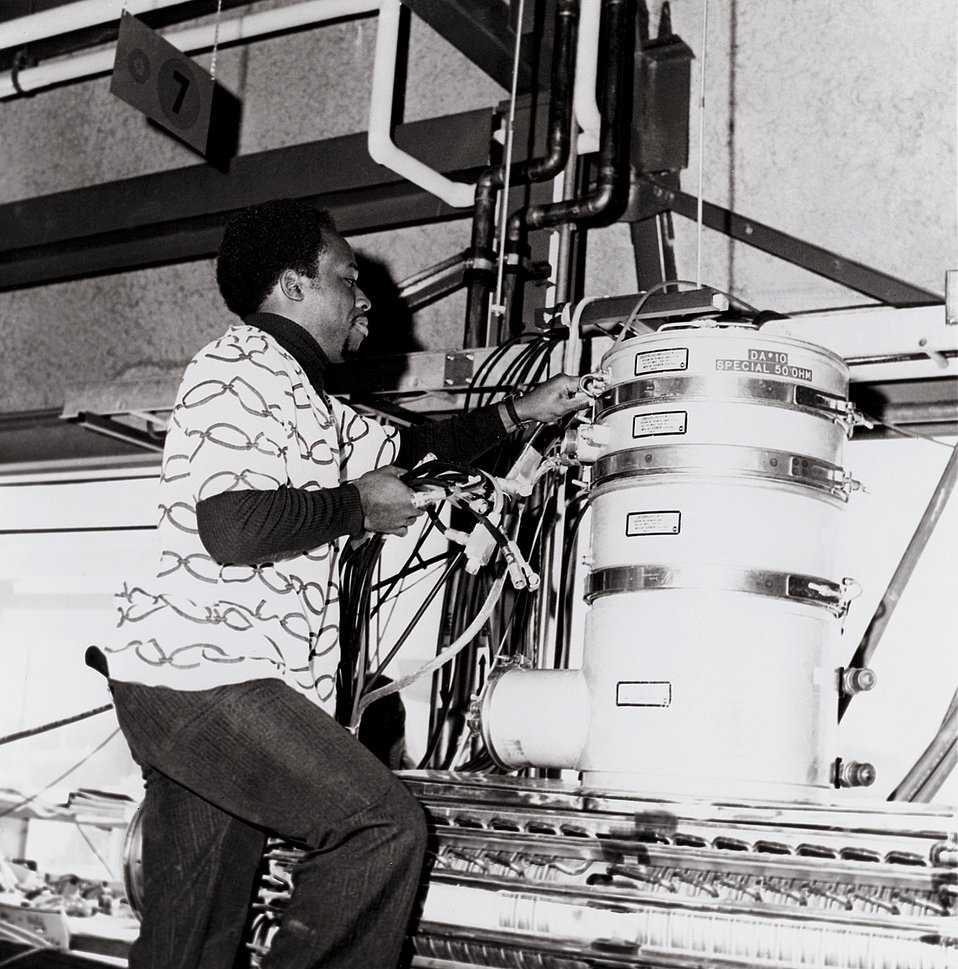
Jeff Ruffin puts cables on a 100 kilowatt radio frequency amplifier on top of a booster test cavity.